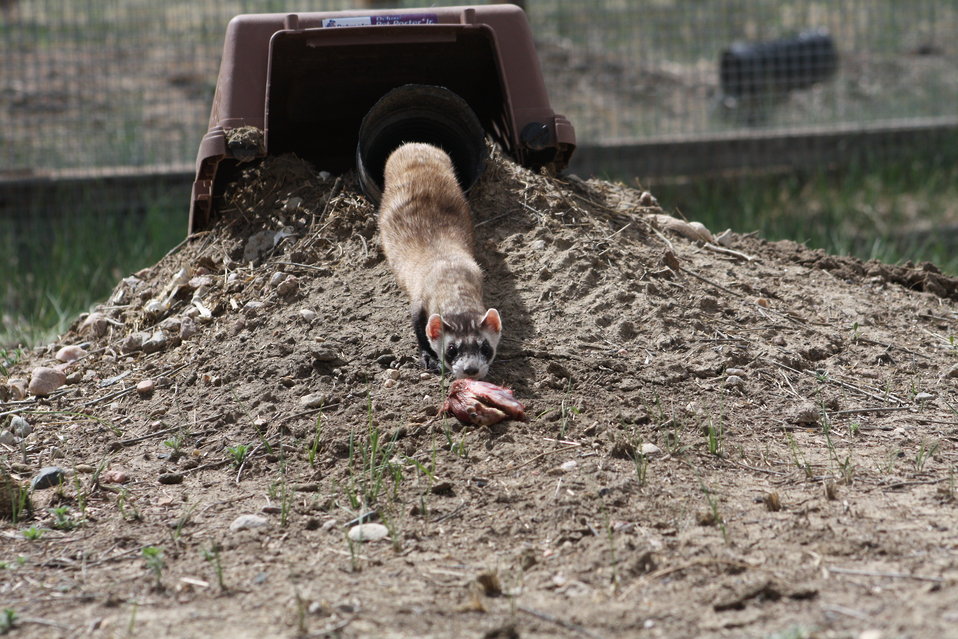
Interns visit the NBFFCC

In the summer of 2012, USFWS Region 6 interns visited the National Black-footed Ferret Conservation Center (NBFFCC) in Colorado to learn how the program reintroduces the endangered Black-footed ferret back into its native habitat.